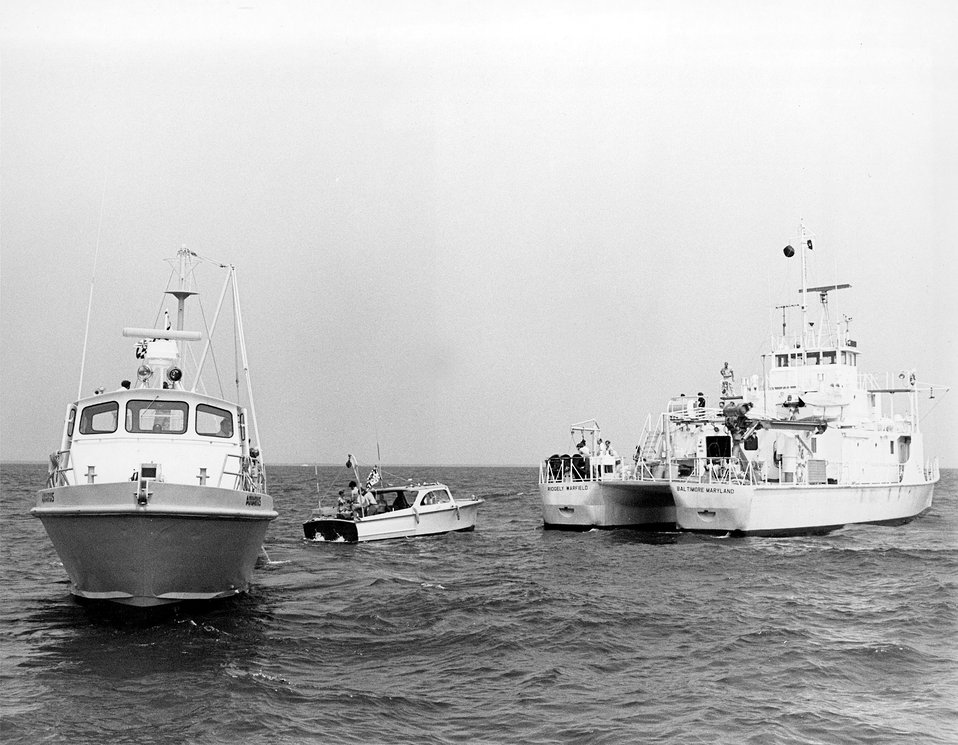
Three University vessels being used to conduct Atomic Energy Commission research projects on the Chesapeake Bay. Circa 1972.